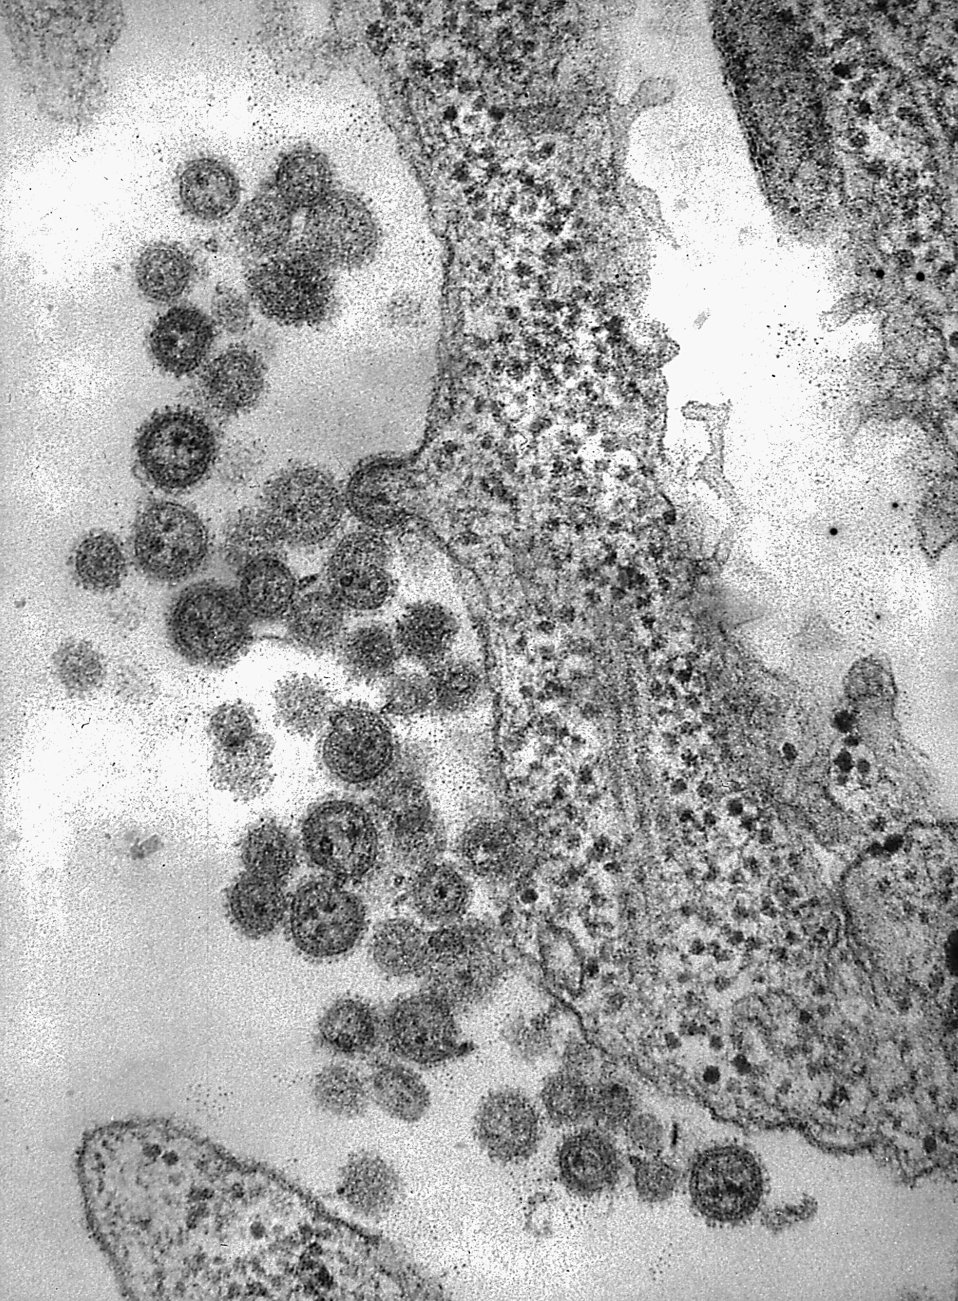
Electron photomicrograph of the Machupo Virus.